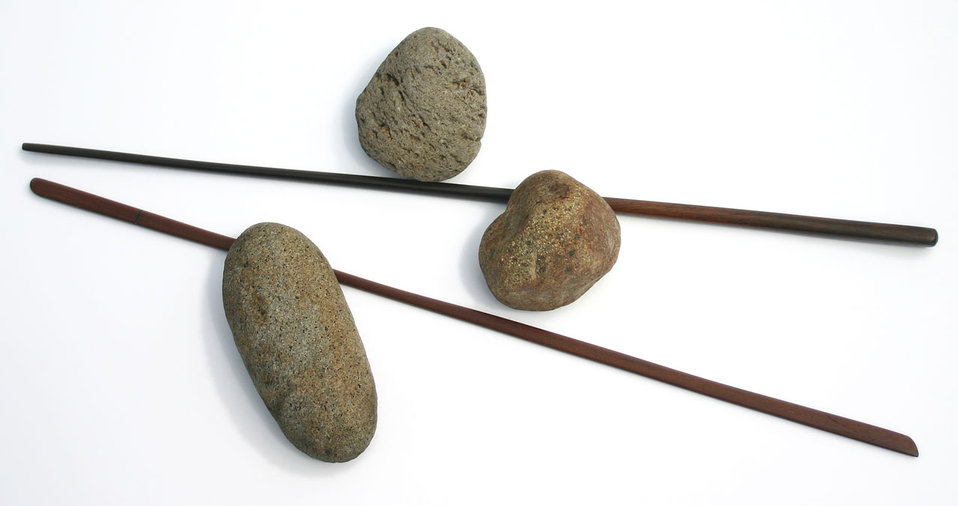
Sticks 'n stones

Carved wooden sticks and river rocks.